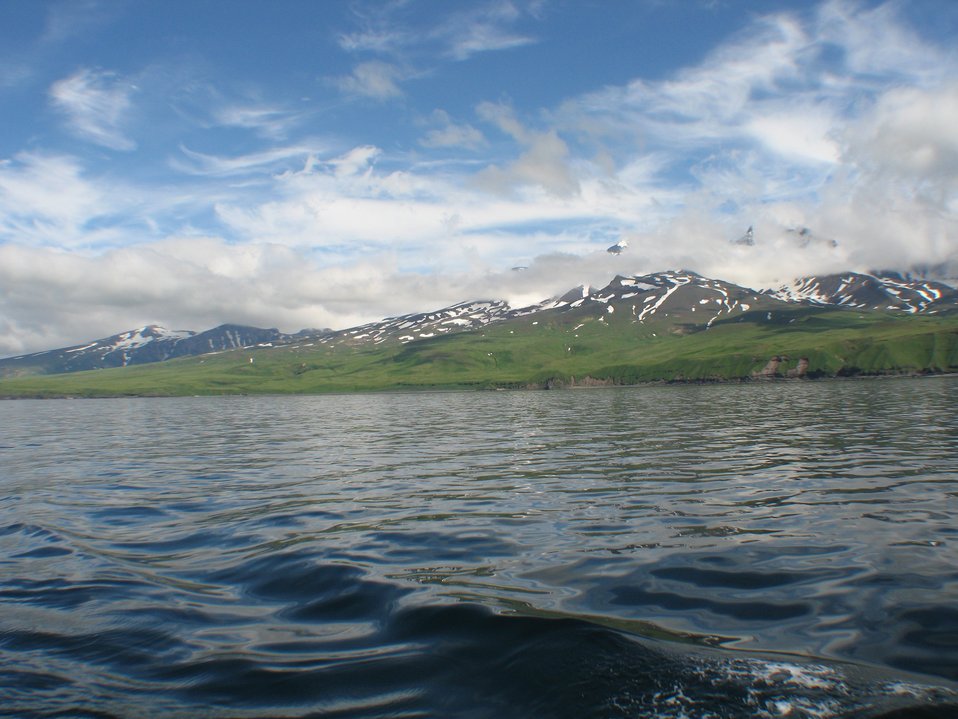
Makushin Volcano shrouded in clouds